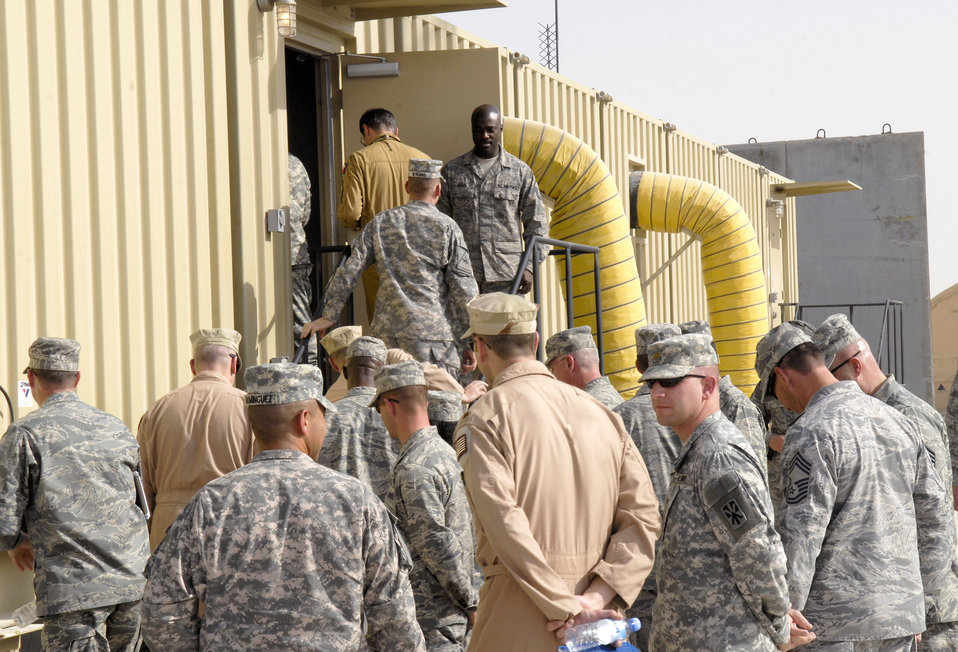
Battlespace command, control center protects region

U.S. and coalition forces enter the new Battlespace Command and Control Center during its opening Feb. 26 at an air base in Southwest Asia. The $30 million facility allows the squadron's operators and technicians to pull real-time information from Air Force, Navy and Army sensor systems in the region.